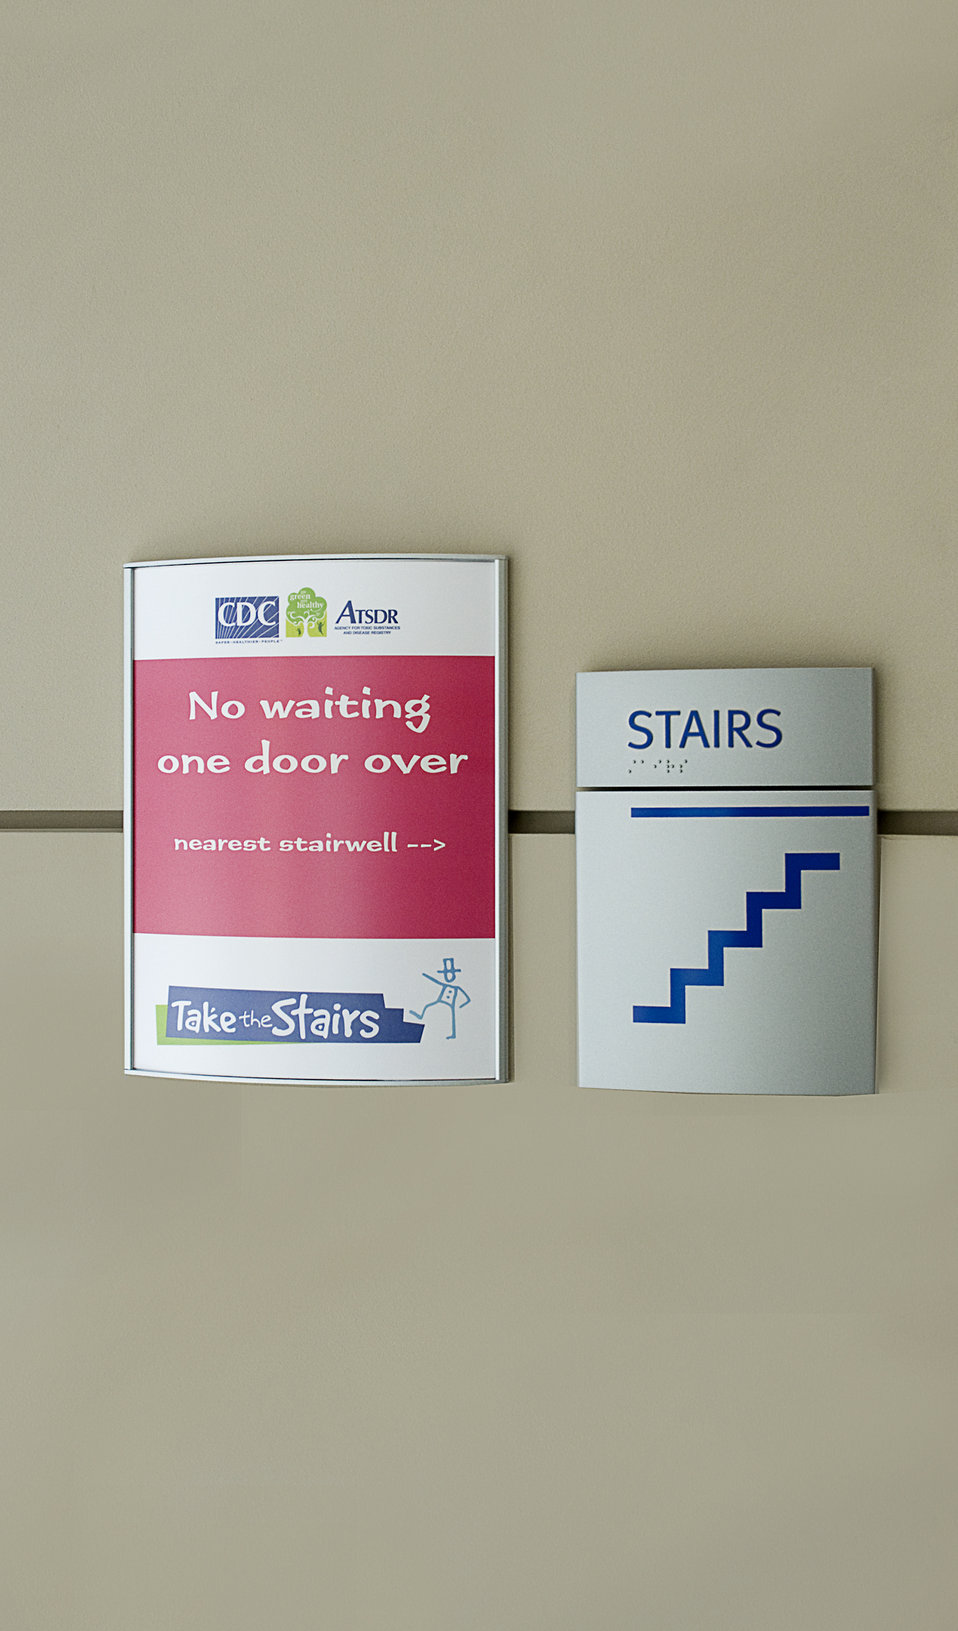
Here are two examples of signs placed throughout the facilities of the Centers for Disease Control (CDC) in Atlanta, Georgia, encouraging employees and vistors to make use of the stairways instead of using mechanized means of transport, i.e., elevators.